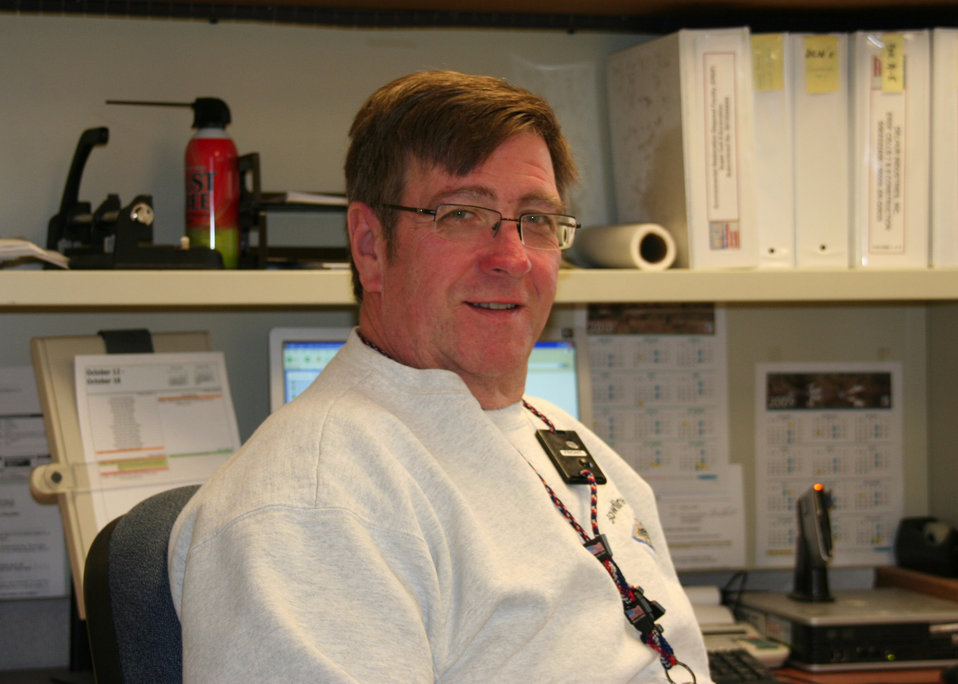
Charlie Skiba spent the past 16 months in “self-imposed semi-retirement” before he was hired in June as a senior construction subcontract engineer for WCH.
Charlie is part of the ERDF expansion team at Hanford. The expansion project is funded by the American Recovery and Reinvestment Act.